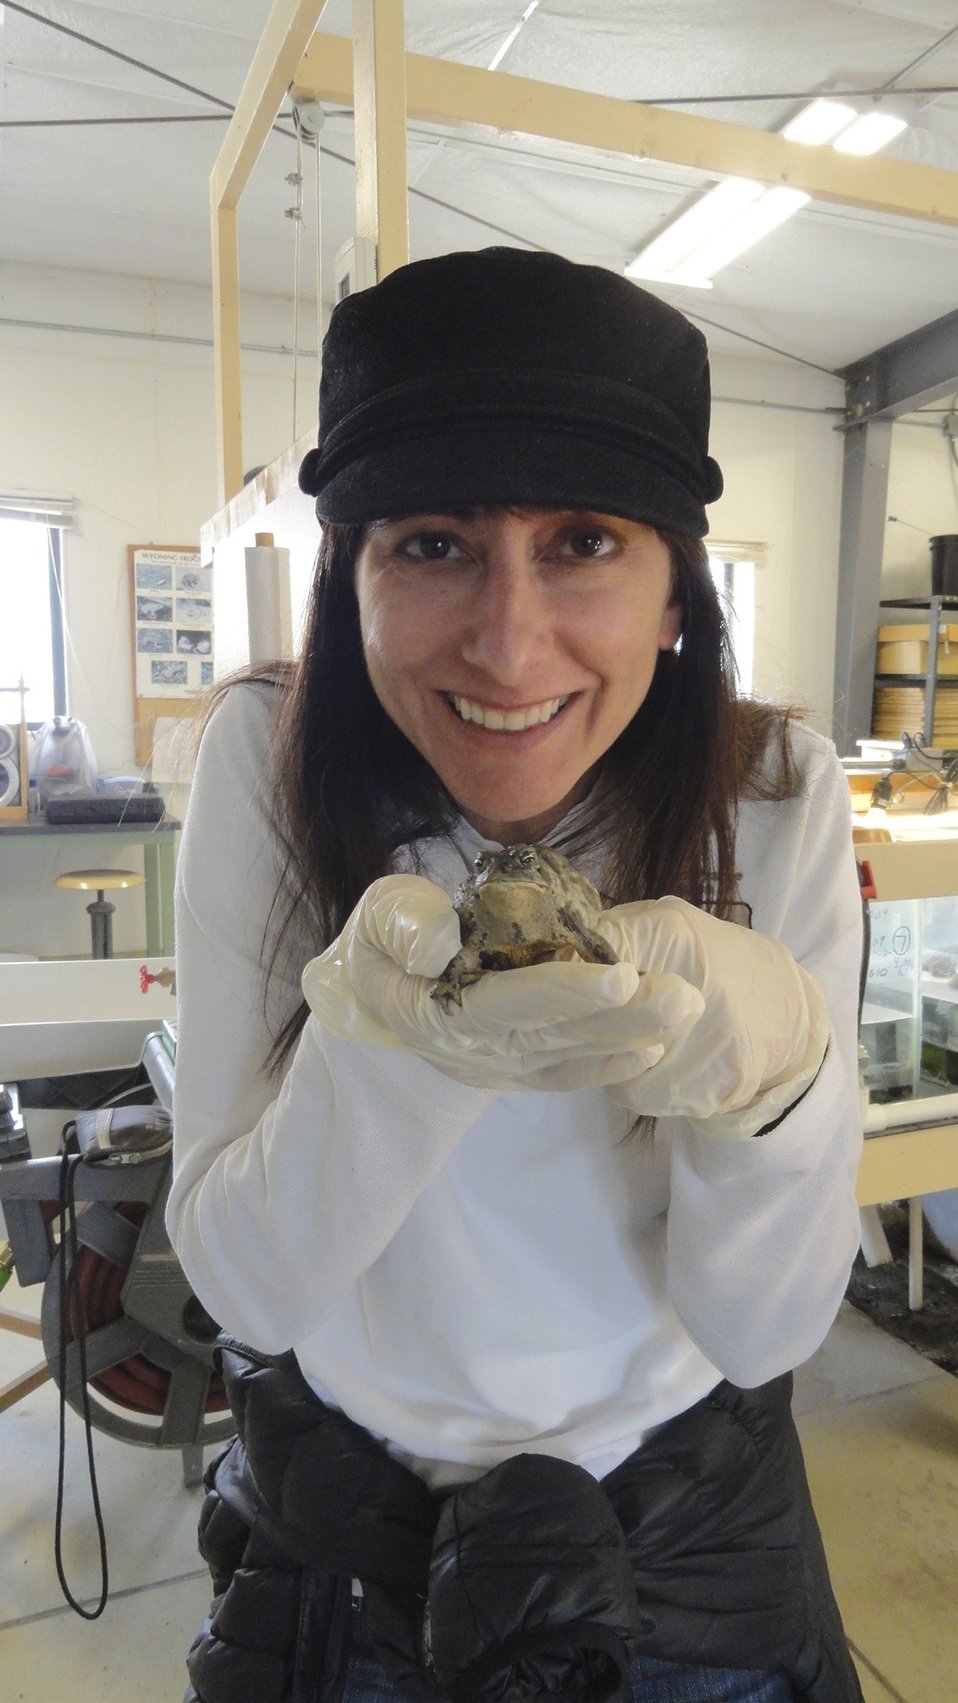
Visiting Saratoga National Fish Hatchery

In April of 2014, regional office employees visited Saratoga National Fish Hatchery to learn more about its efforts towards recovering the Wyoming toad (Bufo baxteri).

The hatchery adopted a unique role in becoming the first unit in the National Fish Hatchery System to become involved in rearing endangered amphibians. The Wyoming toad was a common sight on areas of the Laramie Plains, Albany County, Wyoming, into the early 1970s but the species' populations crashed in the mid-1970s. The Wyoming toad was listed as endangered by the U.S. Fish & Wildlife Service in January 1984. Found only in southwestern Wyoming, the Wyoming toad is considered the most endangered amphibian in North America. The hatchery maintains a captive population for breeding, rearing, and refugia, and the offspring from this program will be used for reintroduction efforts.